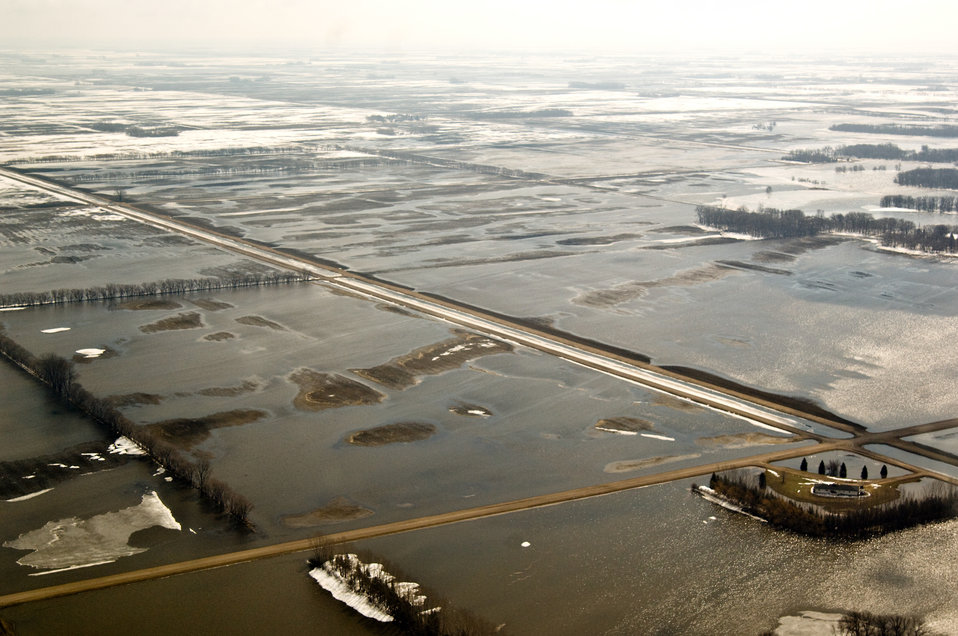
Farmland was under water in North Dakota on April 8, 2009 due to the Red and Missouri Rivers overflowing their banks. North Dakota received abnormally heavy winter snows atop saturated and frozen ground, which was already saturated when it froze at the beginning of winter, melting snow which could not be absorbed by the frozen ground, additional precipitation from a rain storm on March 22, 2009 and a late snowstorm at the end of the month added to the existing snowpack.